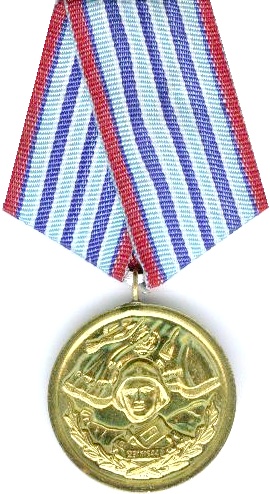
Medal For 10 Years Service To The Bulgarian People's Army.